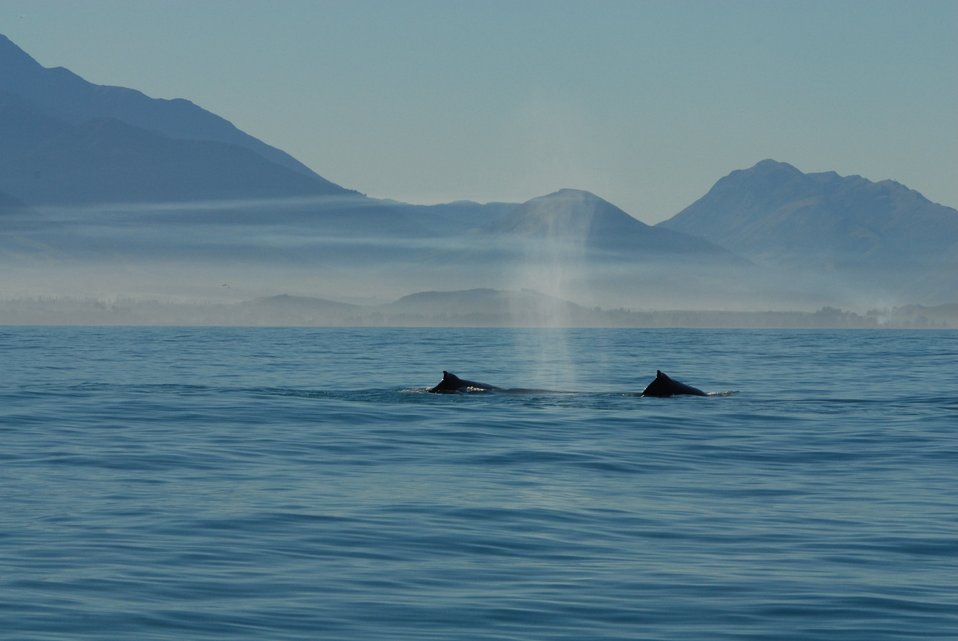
Humpbacks blowing - note the vertical exhalation.